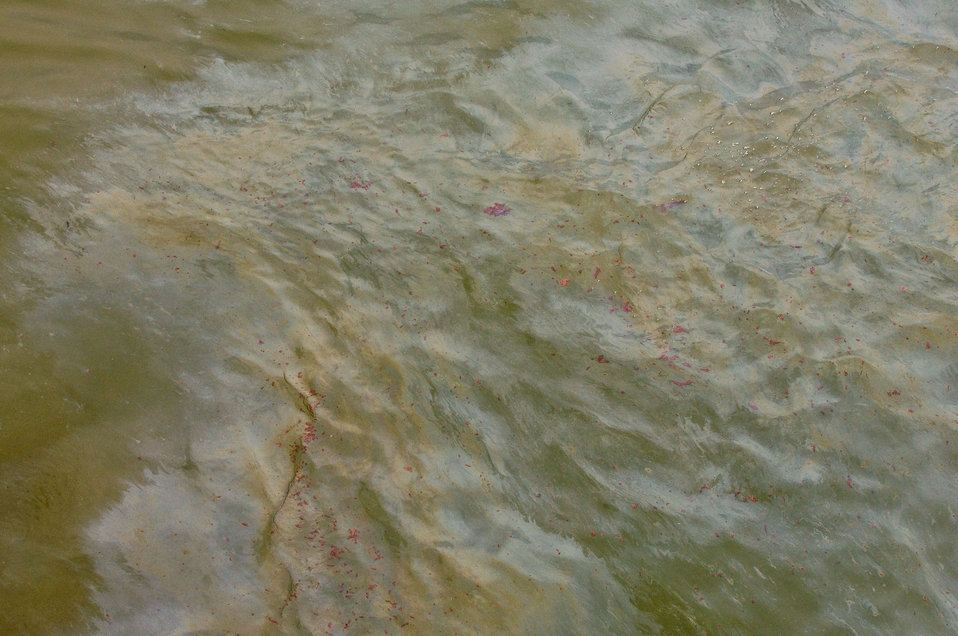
June 4, Oil sheen along Grand Isle State Park, La

Oil from the BP Spill churns in the Gulf of Mexico just offshore of Grand Isle State Park, Grand Isle, LA.